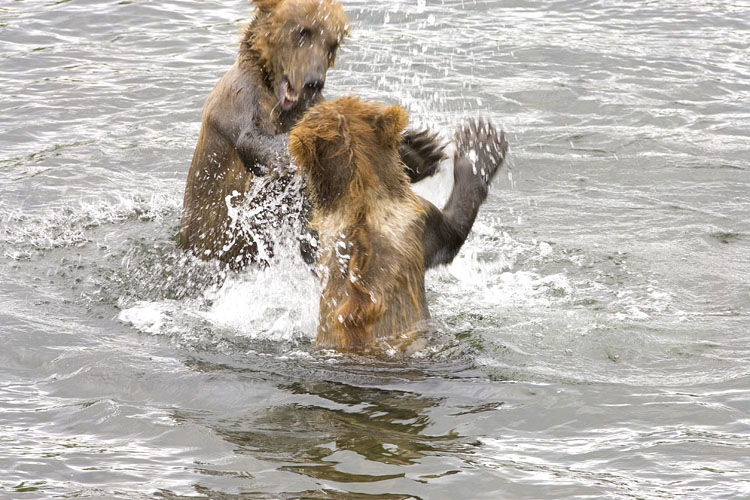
Wildlife of Kodiak Refuge

Playful Kodiak Bears